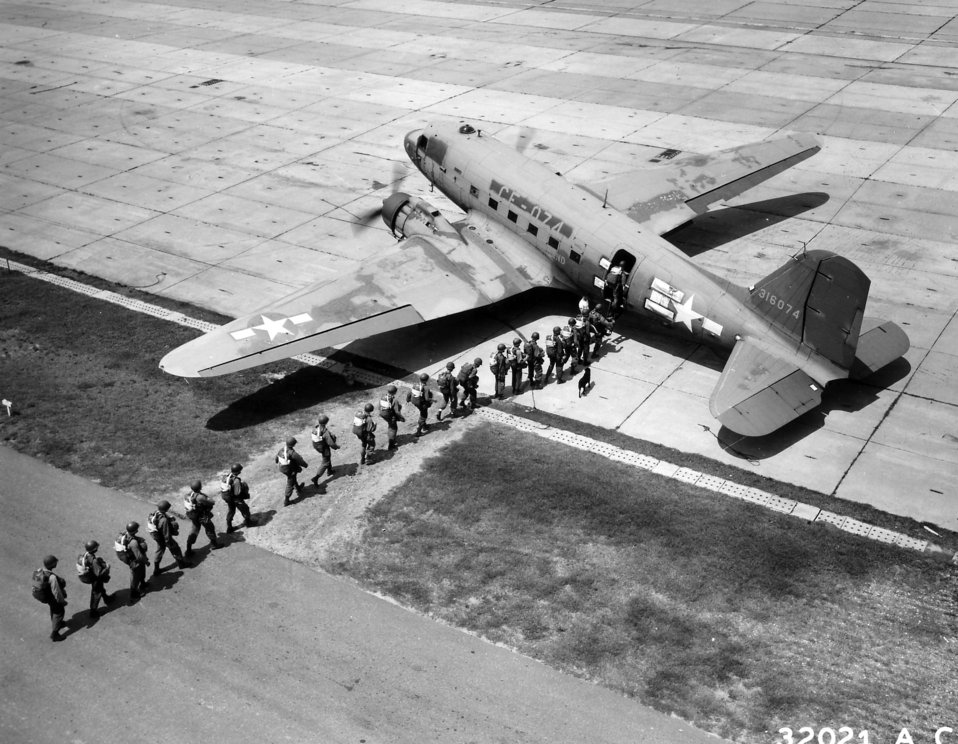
C-47, and 75th Troop Carrier Squadron

1940's -- A.C.-Lawson Field, Ft. Benning, Ga. August 1946. At the command of their jump leader, these twenty-one students of the Airborne School climb aboard a waiting Douglas C-47 of the 75th Troop Carrier Squadron which will take them up for a practice jump. After losing its cargo the plane will return quickly and pick up another load of jumpers without waiting long enough to turn off its motors.